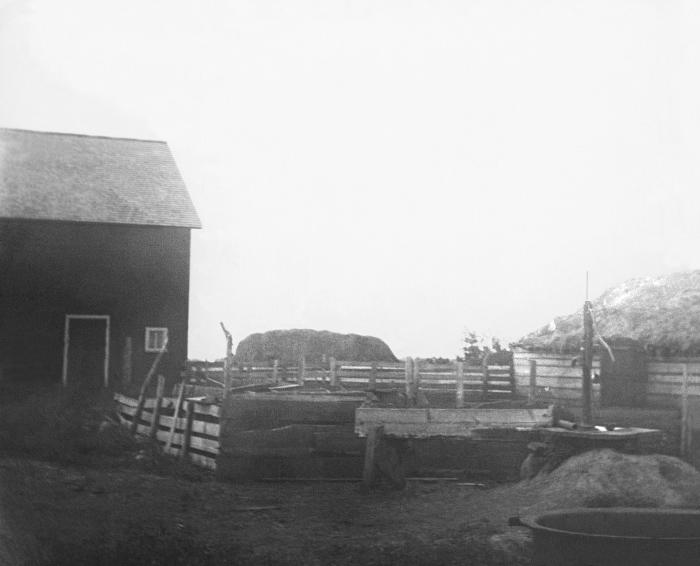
This 1909 photograph depicted an improperly constructed 'dug' well situated on the grounds of a Minnesota farm home. It was one of a series of instructional images that was used by the Minnesota Board of Health to train public health workers.